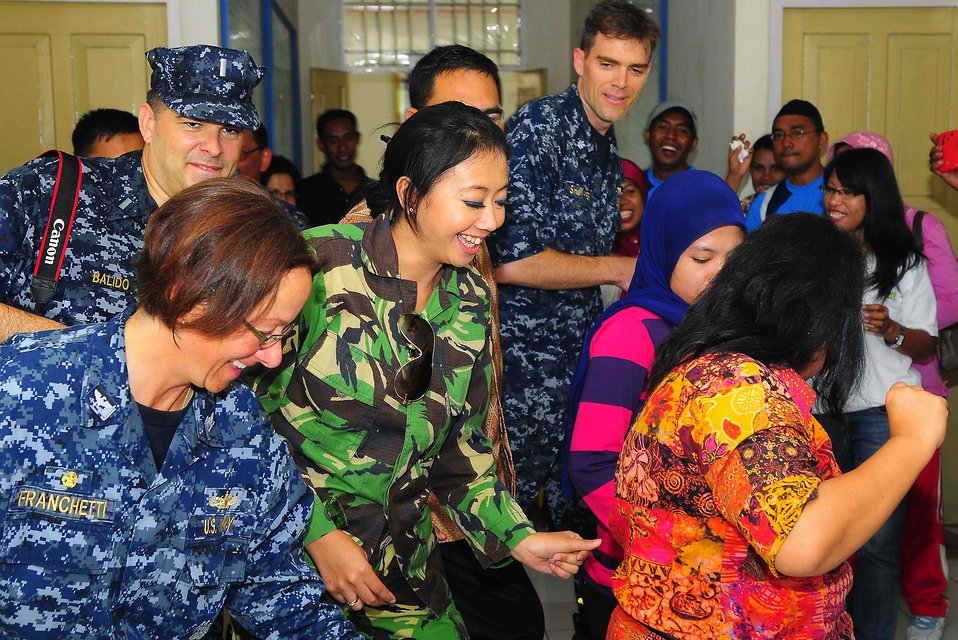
Popular Indonesian Television Personality Astrid Performs an Indonesian Dance With PP 2010 Commander Capt. Franchetti

Astrid, a popular Indonesian television personality, center, performs a popular Indonesian dance with Pacific Partnership 2010 Commander Capt. Lisa M. Franchetti and the medical director of Jailolo Hospital during her visit to a medical civic action program while reporting on Pacific Partnership 2010 in Ternate, Indonesia, on July 23, 2010. Pacific Partnership 2010 is the fifth in a series of annual U.S. Pacific Fleet endeavors conducted in Indonesia as a disaster relief exercise aimed at strengthening regional partnerships.